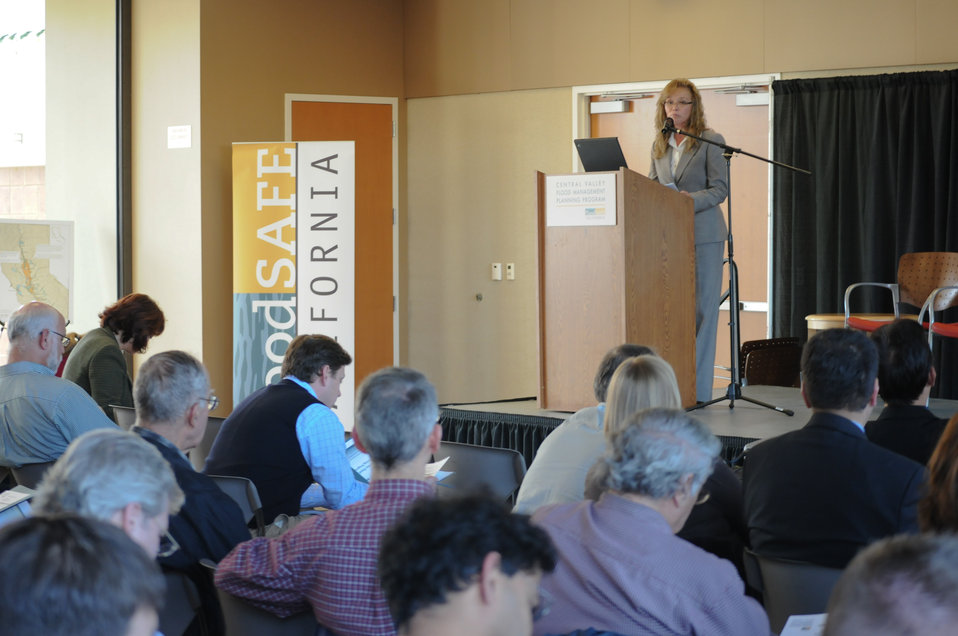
WEST SACRAMENTO, Calif. (Dec. 9, 2010) – U.S. Army Corps of Engineers Sacramento District’s Linda Finley discusses the Corps’ Central Valley Integrated Flood Management Study at the California Department of Water Resources’ Valleywide Forum here Dec. 9, a public meeting to detail progress on California’s Central Valley Flood Protection Plan. Both California’s and the Corps’ plans aim to develop a sustainable flood risk reduction system in California’s Central Valley.